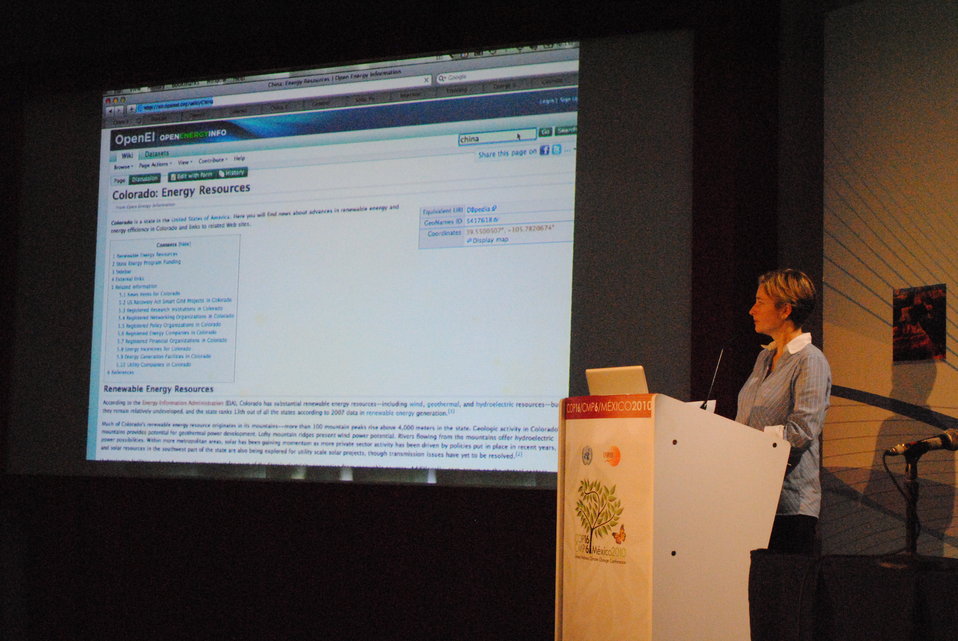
Jacqueline Cochran Showcases the Open Energy Information (OpenEI) Platform

Jacqueline Cochran of the National Renewable Energy Lab demonstrates how the U.S. government's Open Energy Information (OpenEI) platform, a side event at the U.S. Center at COP-16 in Cancun, Mexico, on December 1, 2010.